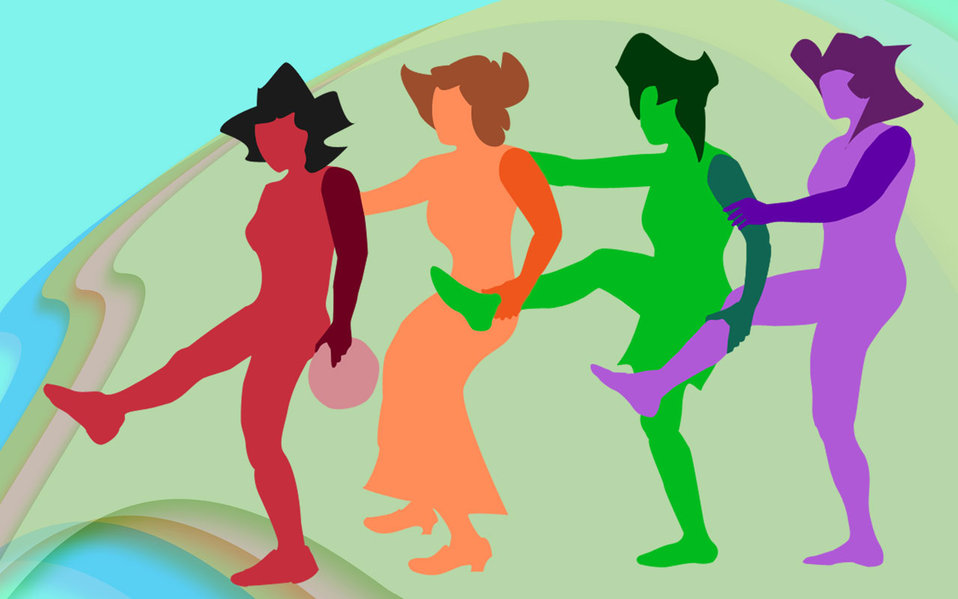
Beach dance

Four dancing figures: getting vector software soon!.